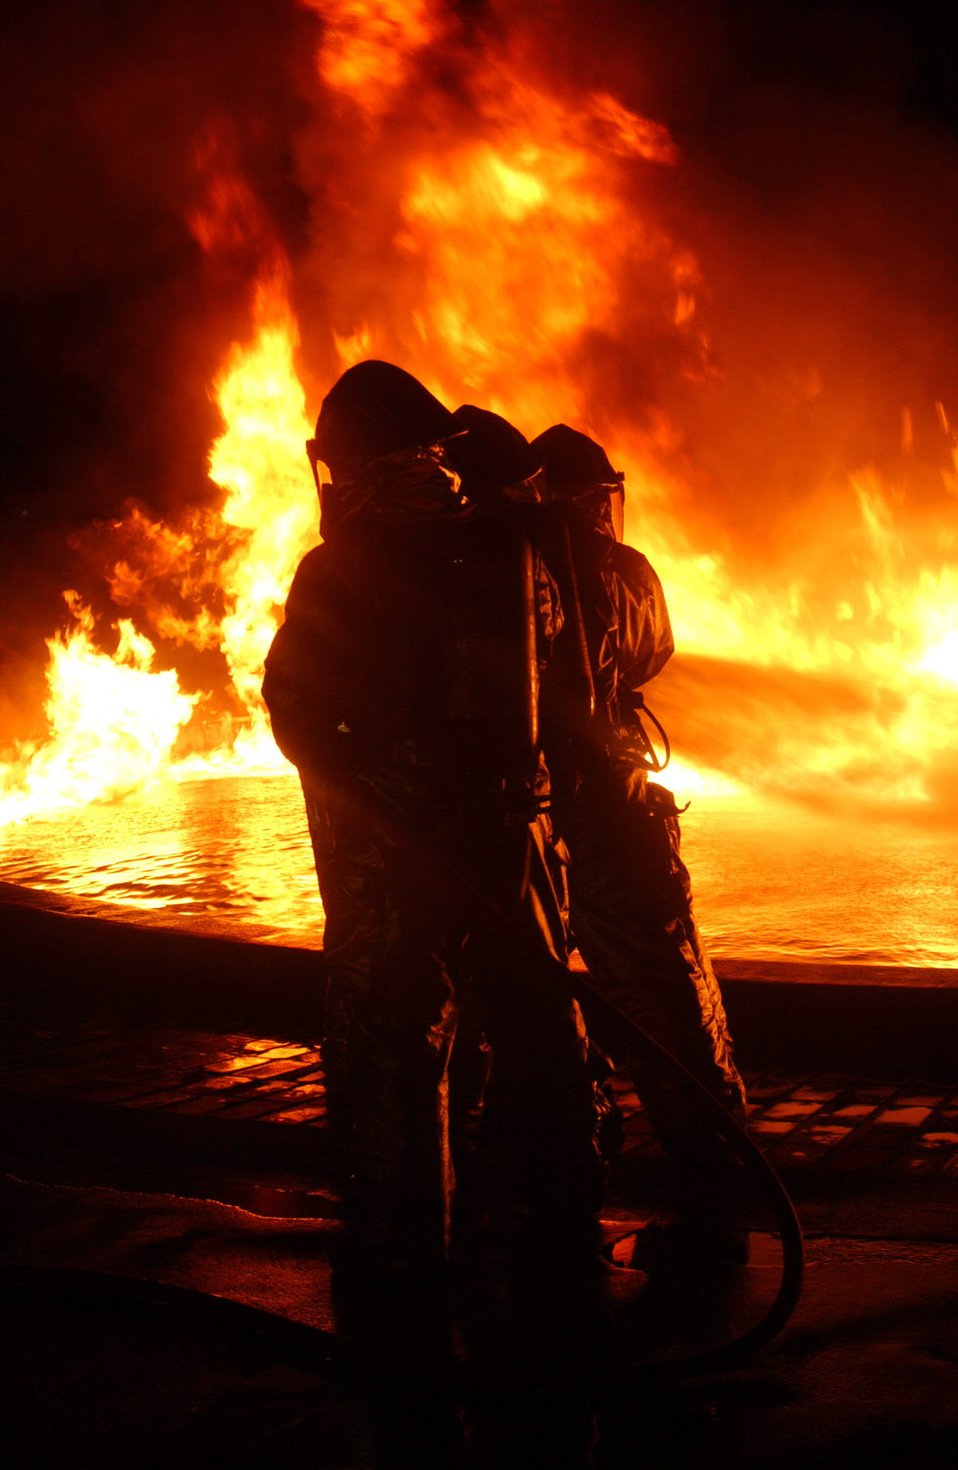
Marines turn up the heat for airmen on Okinawa

MARINE CORPS AIR STATION FUTENMA, Japan -- Kadena fire emergency services Airmen fight a blaze in a live fuel fire pit here Sept. 22. Their suits can withstand radiant temperatures of up to 2,000 degrees. The 18th Civil Engineer Squadron Airmen used the Marine facility for training while theirs is undergoing maintenance.